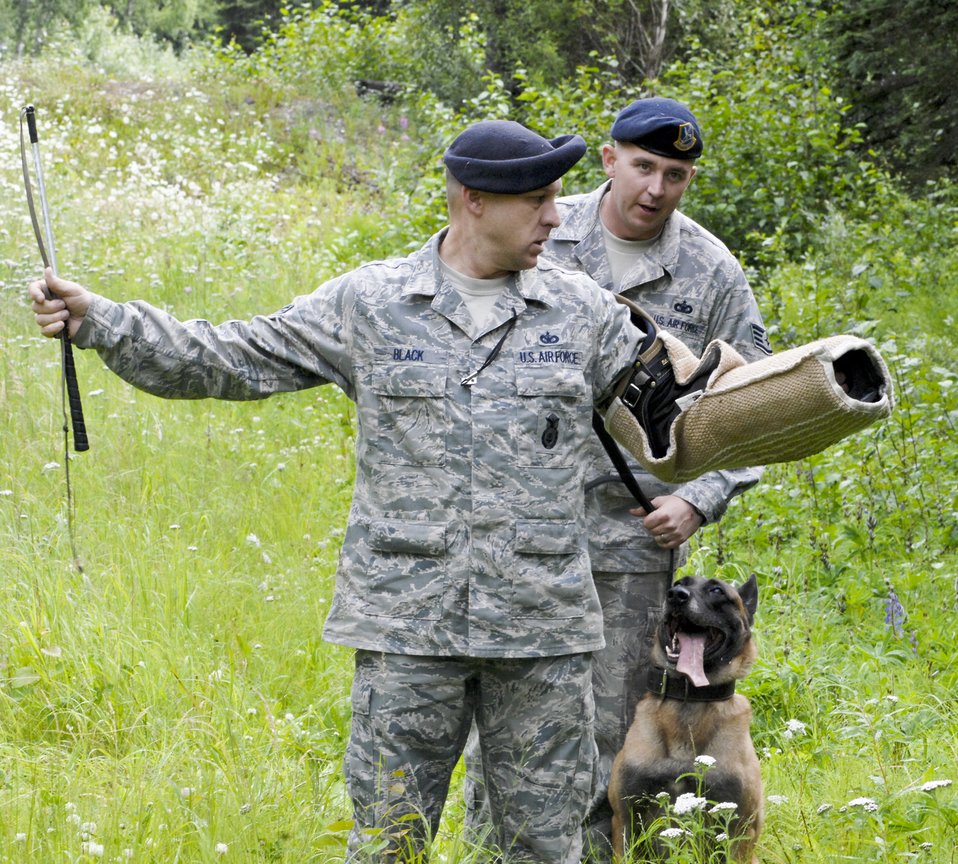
Working dogs at Elmendorf

Staff Sgt. Scott Heise and military working dog Dino search a